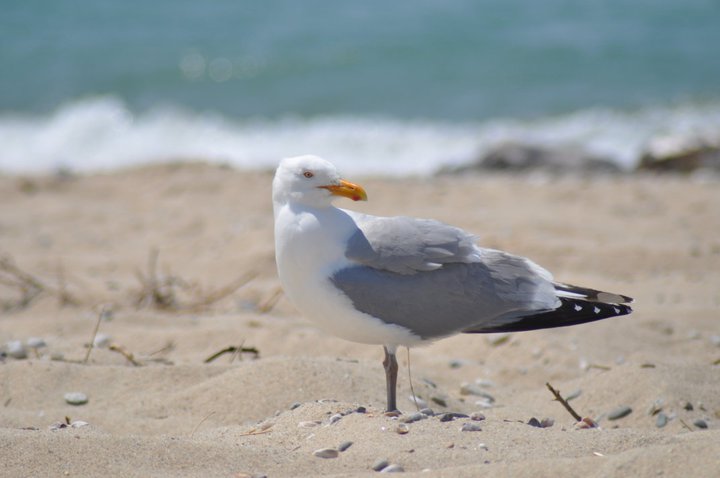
Herring Gull

A herring gull at the Nantucket National Wildlife Refuge, MA.